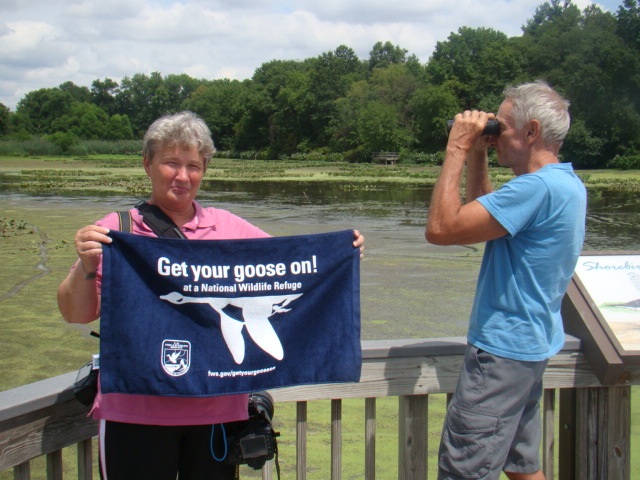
Get Your Goose On!

Birders Kay and George Meng looking at shorebirds while Getting Their Goose On!